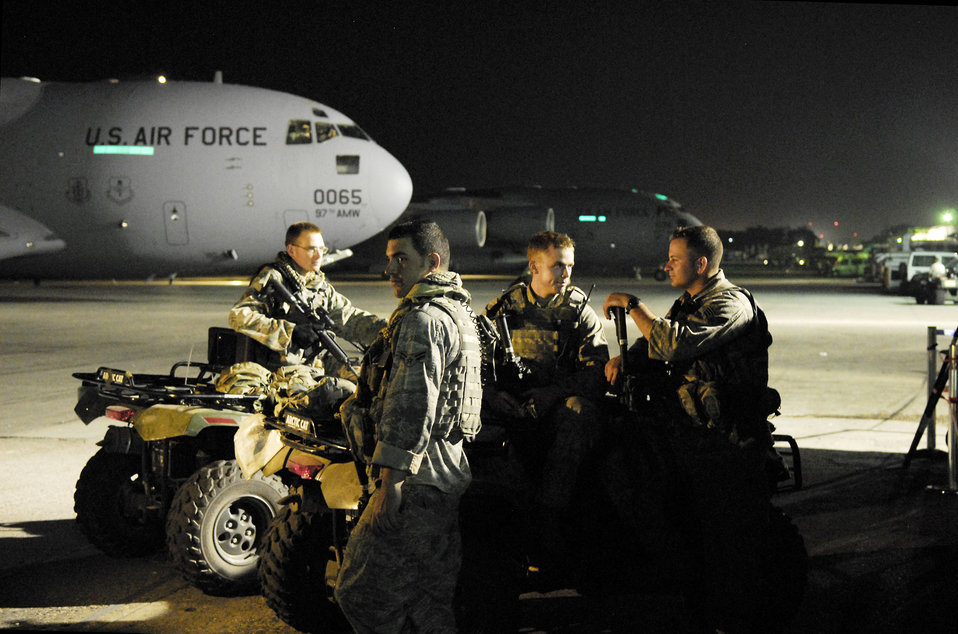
Pope members support Operation Unified Response

Airmen provide security on the flightline Jan. 19, 2010, at the Toussaint L'Ouverture International Airport in Port-au-Prince, Haiti. In addition to ramp security available on site, incoming Air Force aircraft typically carry a team of specially trained security forces personnel known as